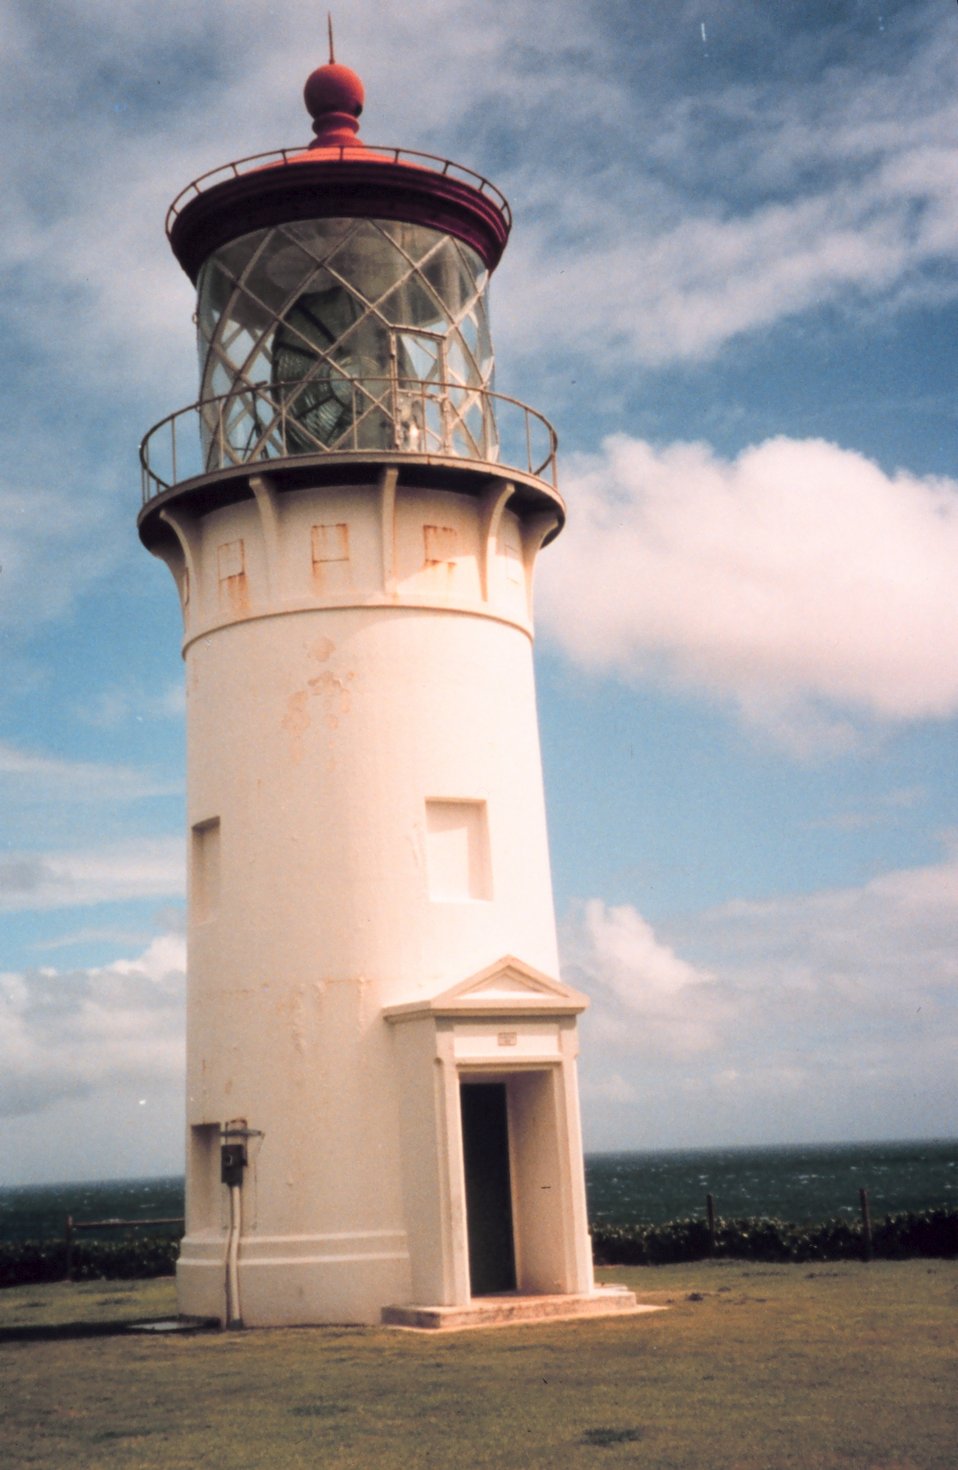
Kilauea Point Lighthouse